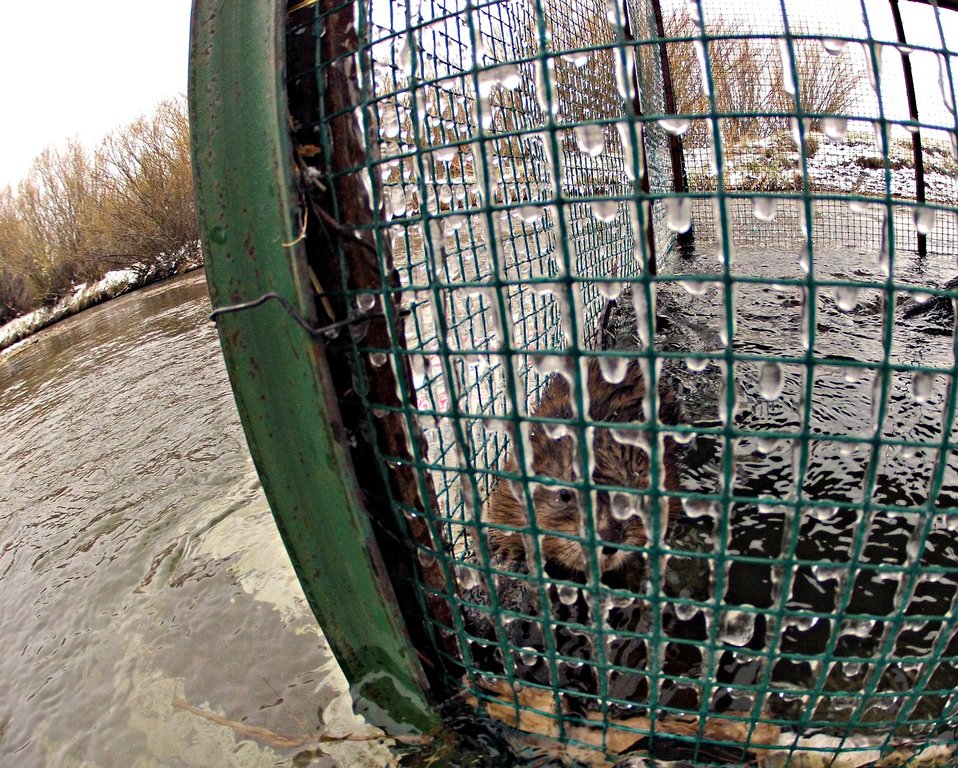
Unintended bycatch

While making their morning rounds, Montana FWCO biologists were greeted by an unusual guest. Expecting to count Arctic Grayling, they had to first remove a muskrat from our trap.

The design of a fish trap relies on in-stream panels to effectively 'herd' migrating fishes into a single collection point. However, these devices can occasionally herd other organisms into the trap as well.

Removing the lid and minor cajoling were all that was required for the muskrat to bid farewell and take his leave unharmed.